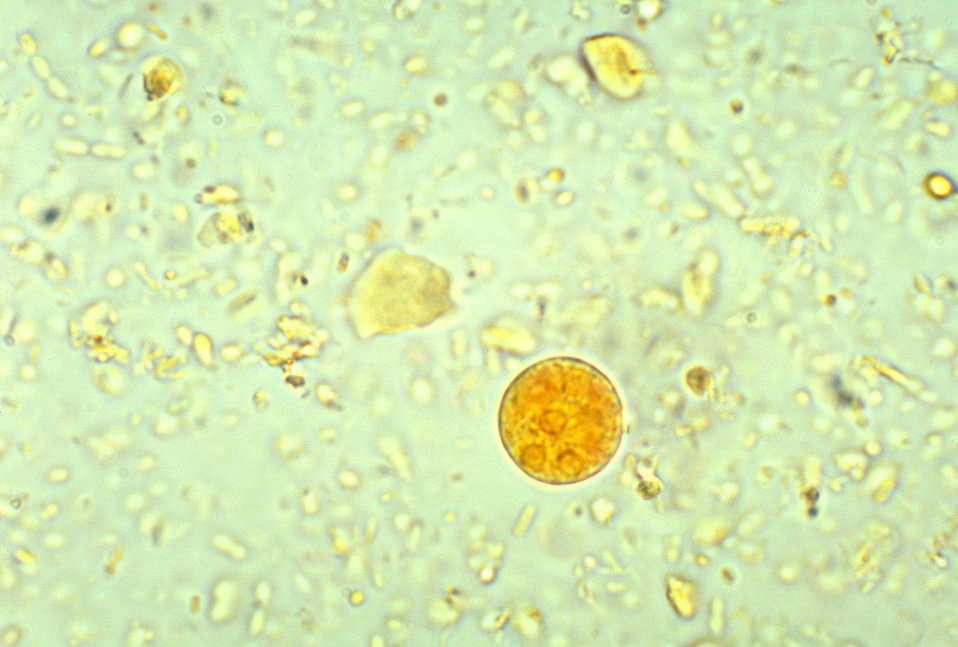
This photomicrograph depicts a mature trinucleated cyst of an Entamoeba histolytica amoebic parasite.